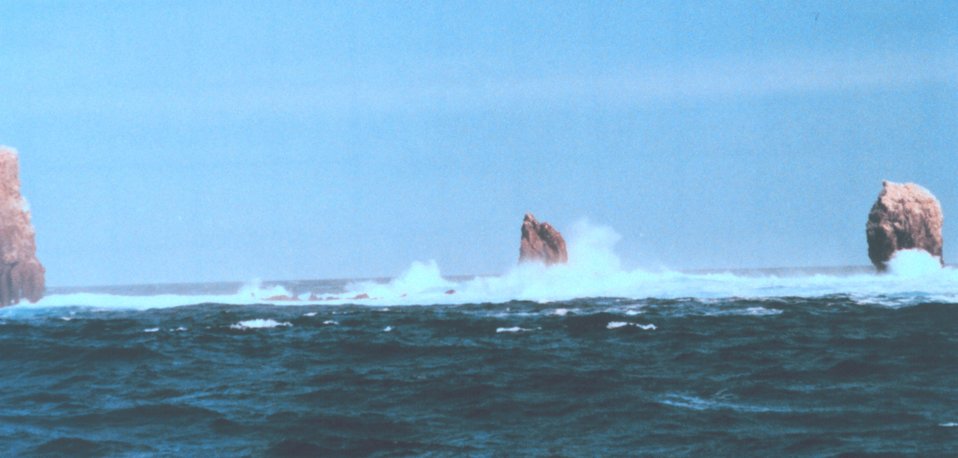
Alijos Rocks in the middle of nowhere off the Mexican Coast.